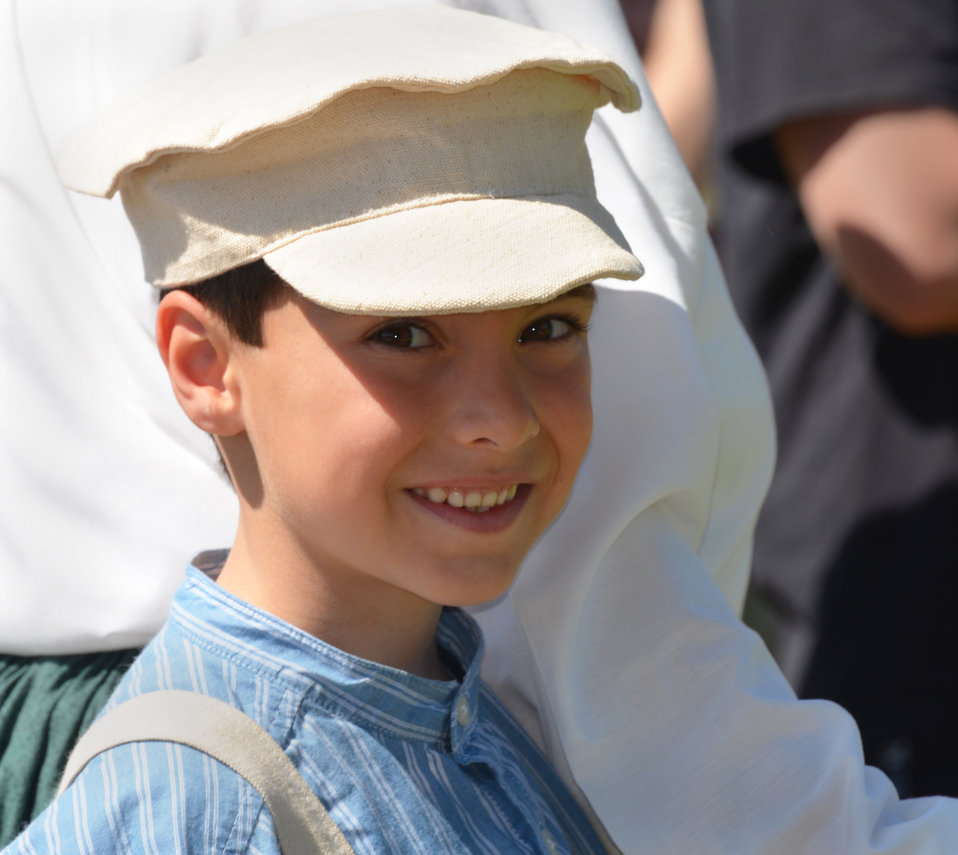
Historic weekend in Knights Ferry

Cannon fire and costumes are obviously fun for all ages. Dressed properly for the era, this young man watches as Yanks and Rebels skirmish in the Civil War reenactment at Knights Ferry at the U.S. Army Corps of Engineers Sacramento District’s Stanislaus River Parks in Knights Ferry, Calif., March 22, 2014.